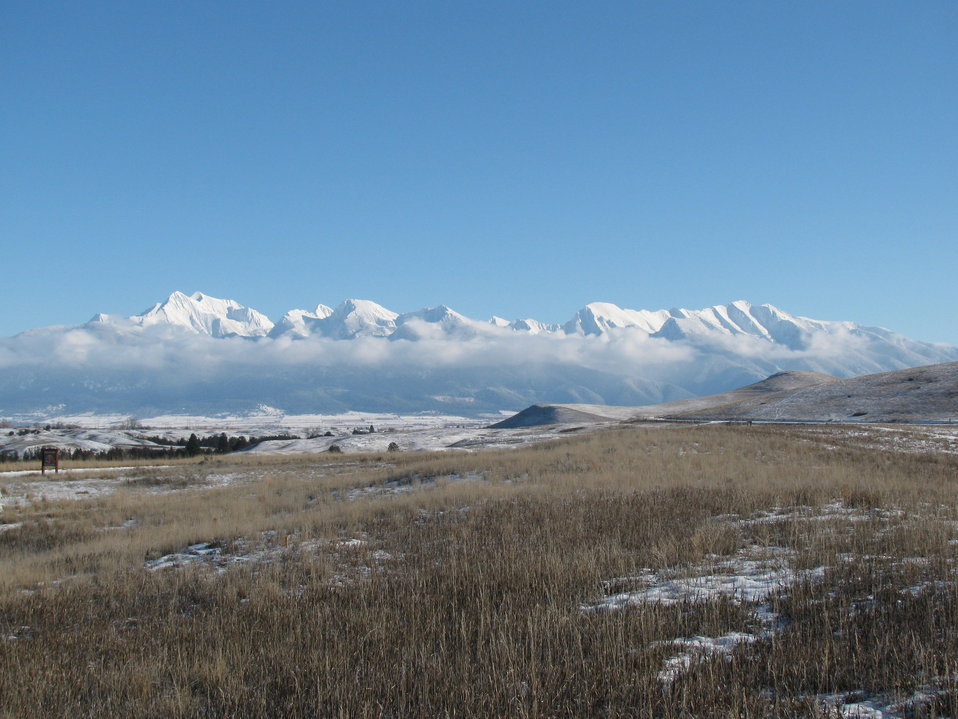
Mission Mountains

A view looking east from the National Bison Range Visitor Center to the Mission Mountains in Montana. The Refuge actually has more snow now and, when the clouds clear, scenery is spectacular.

Credit: USFWS / January 2011